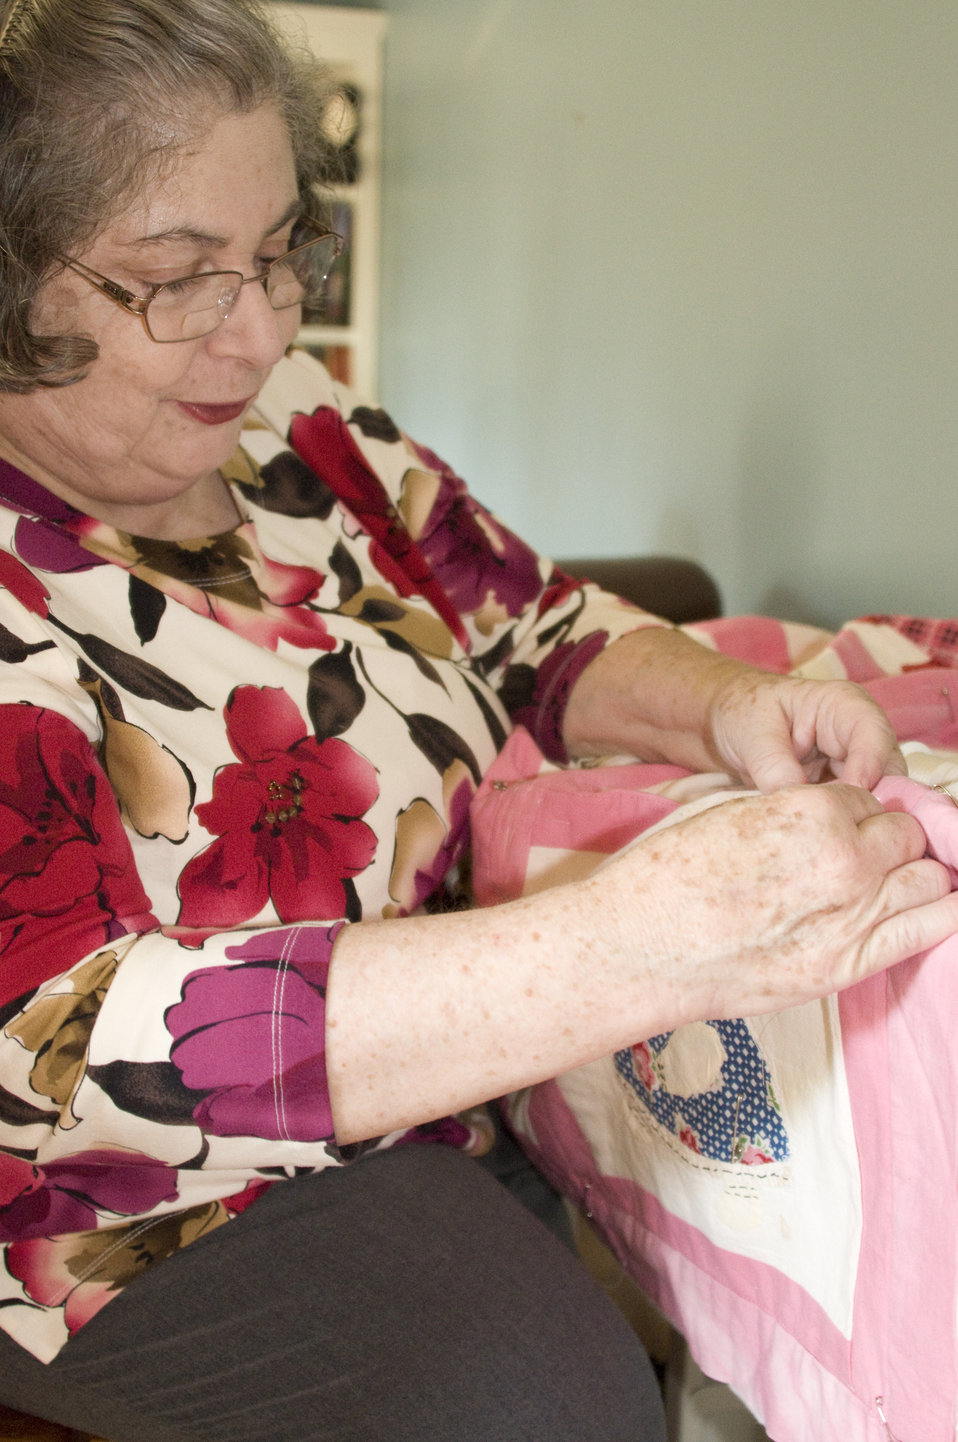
The woman pictured here is a rheumatoid arthritis patient who was not letting her painful condition become a daily impediment in her life, and thereby, keep her from enjoying those activities that bring her pleasure, including the quilt stitching in which she was engaged at the time of this photograph.